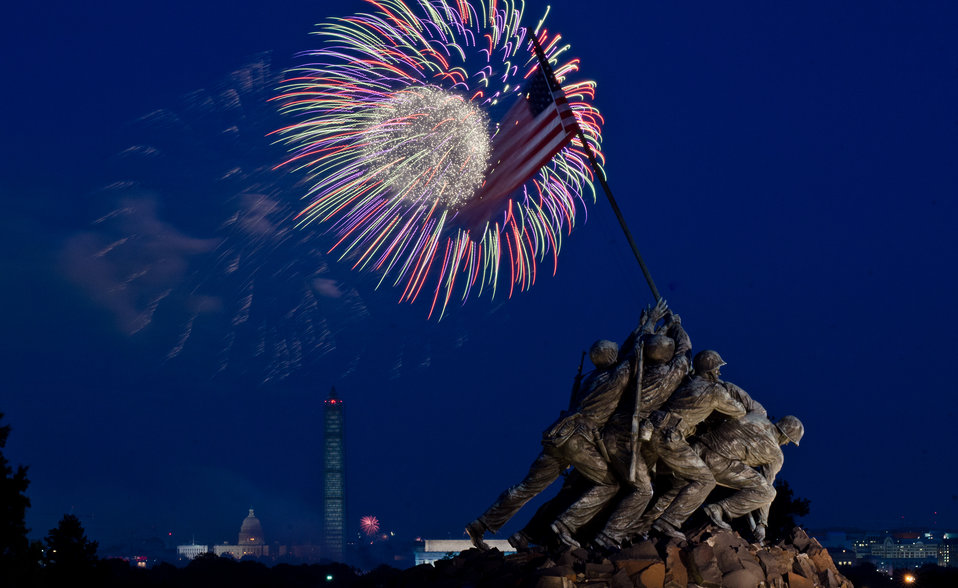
Independence Day celebration fireworks are seen from the Iwo Jima, U.S. Marine Corps Memorial in Arlington, VA on Jul. 4, 2013. In the distance are the Lincoln Memorial, the U.S. Department of Agriculture (USDA) Yates Building (dark red brick building), the Washington Monument (with scaffolding), and the U.S. Capitol building in Washington, D.C.